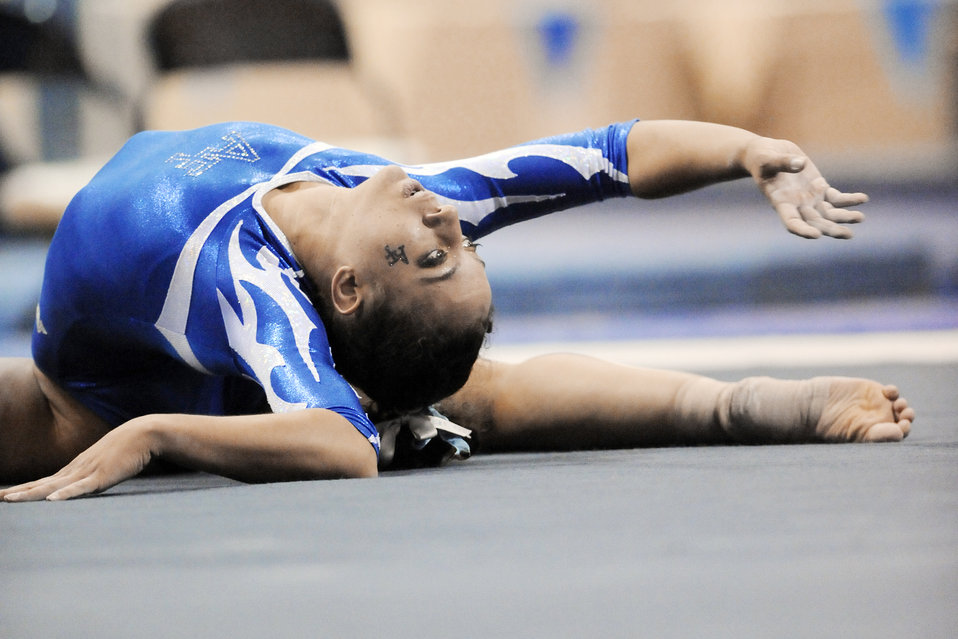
Falcon gymnasts compete against UC Davis

Falcon freshman Tara Harris holds a pose in her floor routine during Air Force's meet against University of California Davis Jan. 30, 2010, in the Cadet Gymnasium in Colorado. Air Force lost the meet 191.575 to 185.300 despite two event titles. Sophomore Jenna Dudley took the title in the floor exercise with a tally of 9.775, and junior Brittany Dutton took the vault title with a 9.625.